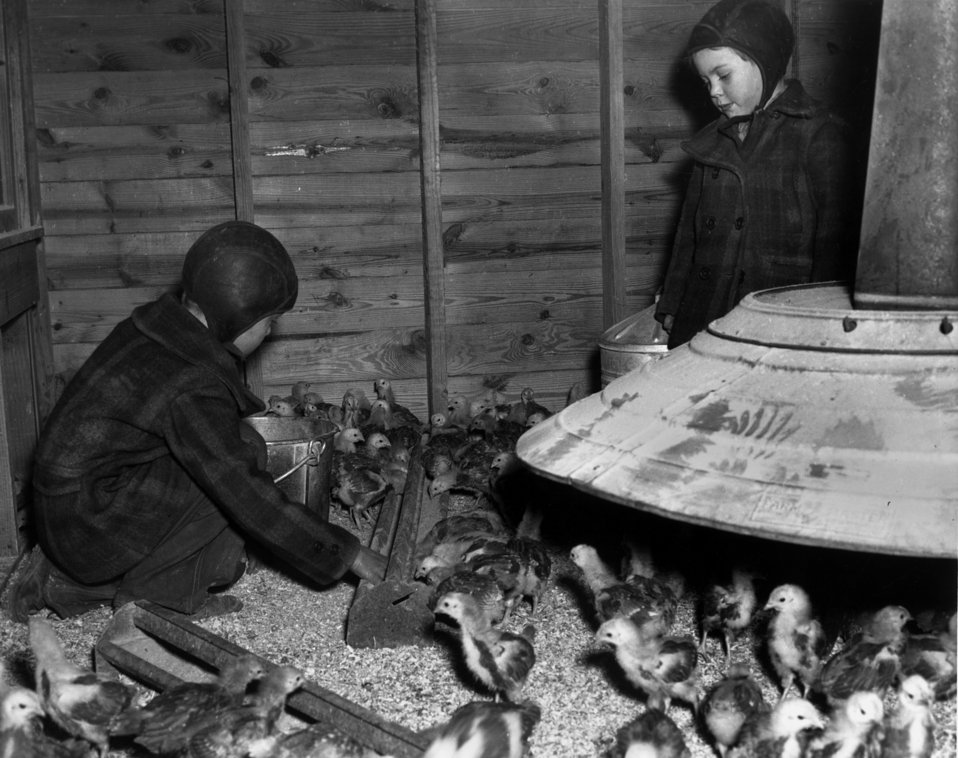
Chicken Farm - Oak Ridge

PRO311-6 DOE photo by Ed Westcott Chicken Farm - Oak Ridge Tennessee 2-22-1945